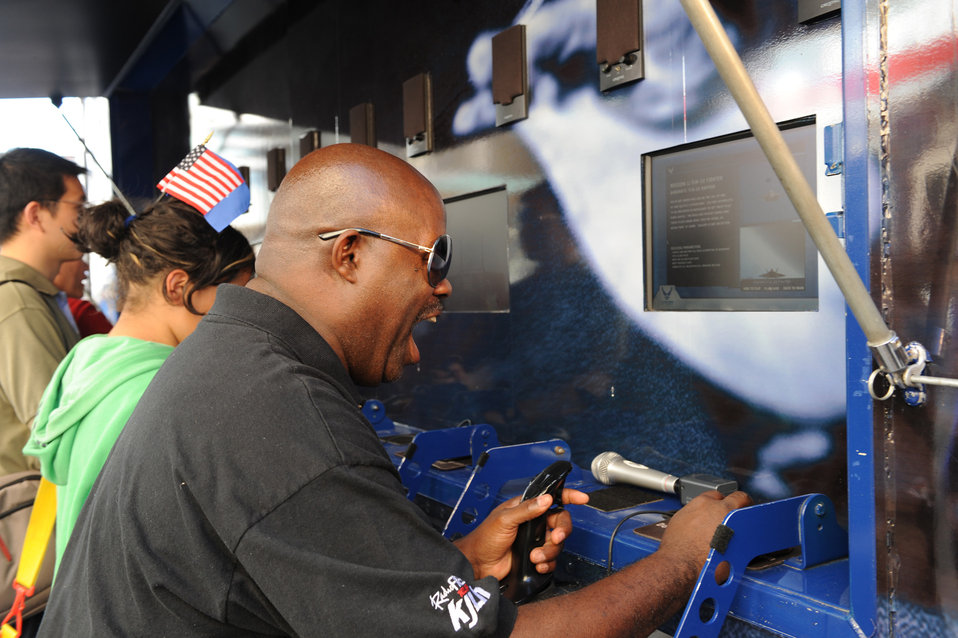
Air Force Expo in Hollywood

Guy Black, from